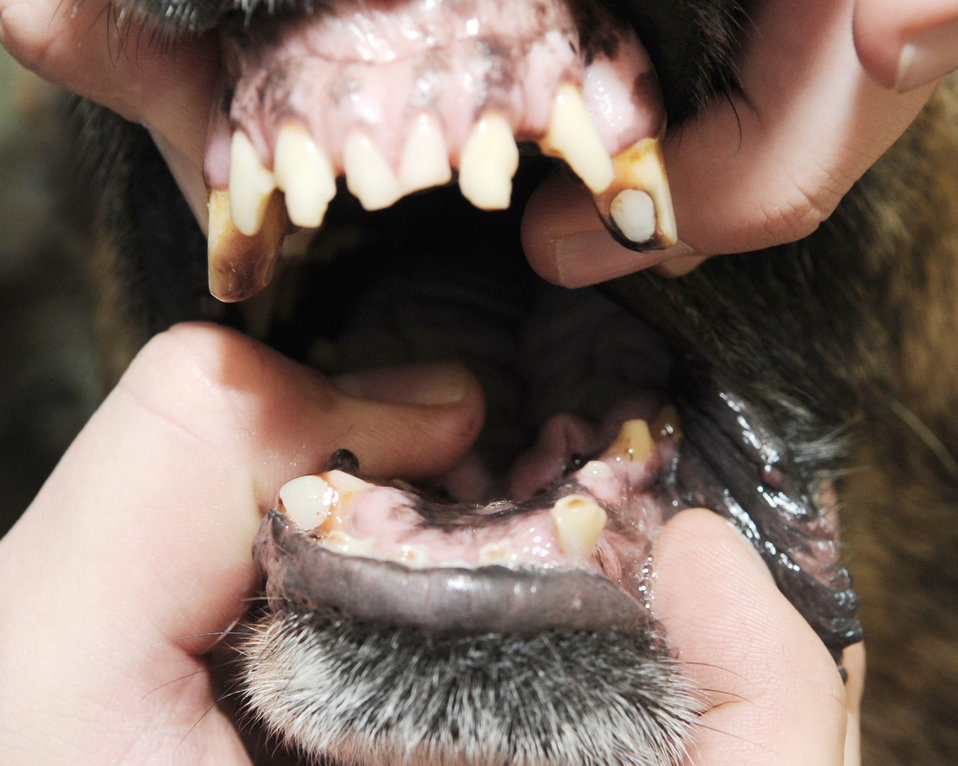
K-9 without a canine keeps working

Staff Sgt. Patrick Lau (not pictured) opens Arek's mouth to show the damage this military working dog suffered when the convoy Arek was traveling in was hit by an explosive in Iraq. At the time of the incident, Arek clenched his jaw so hard that he shattered four teeth, three of which were reconstructed. Sergeant Lau and Arek are both deployed to the 376th Expeditionary Security Forces Squadron at the Transit Center at Manas, Kyrgyzstan, from Hill Air Force Base, Utah.